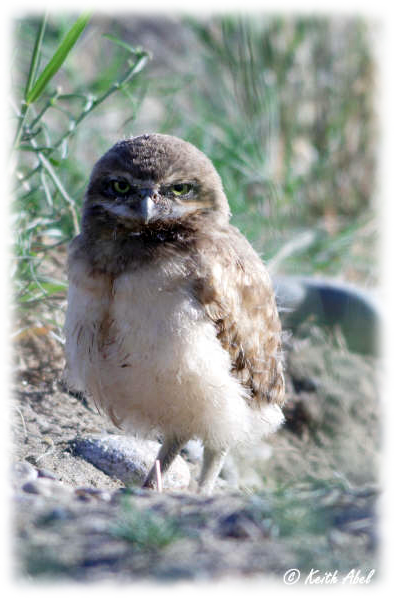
Owlet - Umatilla NWR